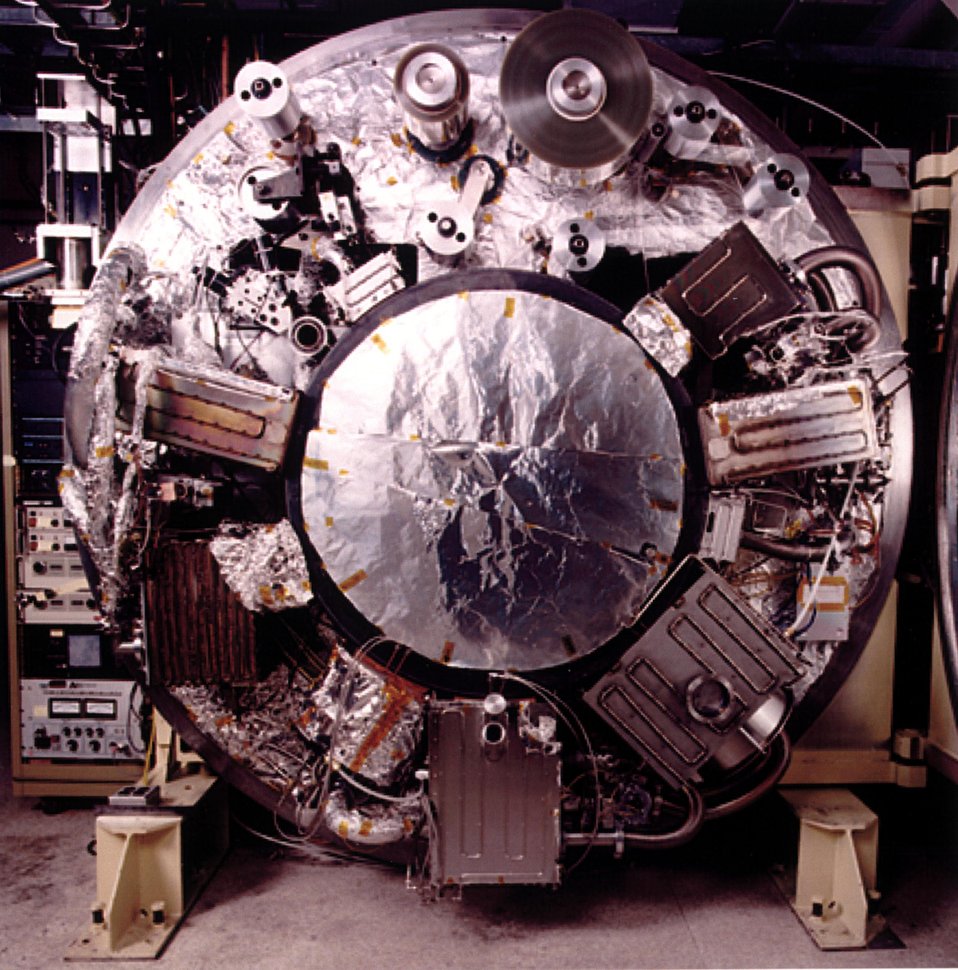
PNNL'S LIQUID MULTILAYER/POLYMER MULTILAYER PROCESSES FOR VACUUM DEPOSITION.

LML/PML PROCESSES ENABLE VACUUM DEPOSITION OF SMOOTH, CONTINUOUS POLYMER LAYERS ON FLEXIBLE SURFACES. LAYERS AS THIN AS 100 ANGSTROMS OR AS THICK AS A FEW HUNDRED MICRONS. PRODUCT USES INCLUDE LIGHT WEIGHT AND RECHARGEABLE LITHIUM POLYMER BATTERIES FOUND IN CELLULAR PHONES AND LAPTOP COMPUTERS.